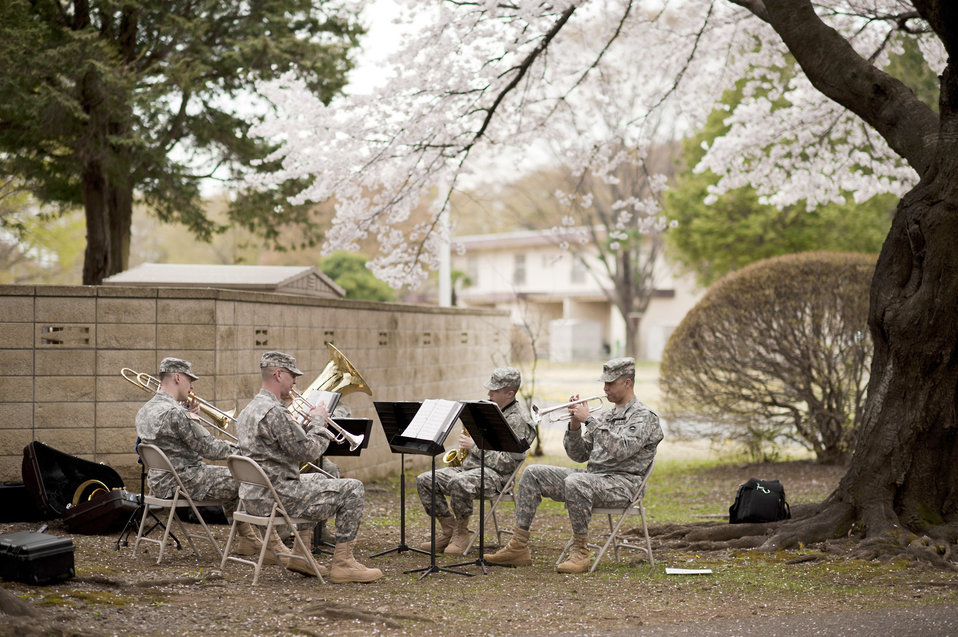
Yokota Cherry Blossoms Bloom

Army and Air Force bandsmen perform for Japanese visitors viewing cherry blossoms April 10, 2011, at Yokota Air Base, Japan. Yokota officials opened the base to Japanese neighbors to view the canopy of cherry blossoms along the road.